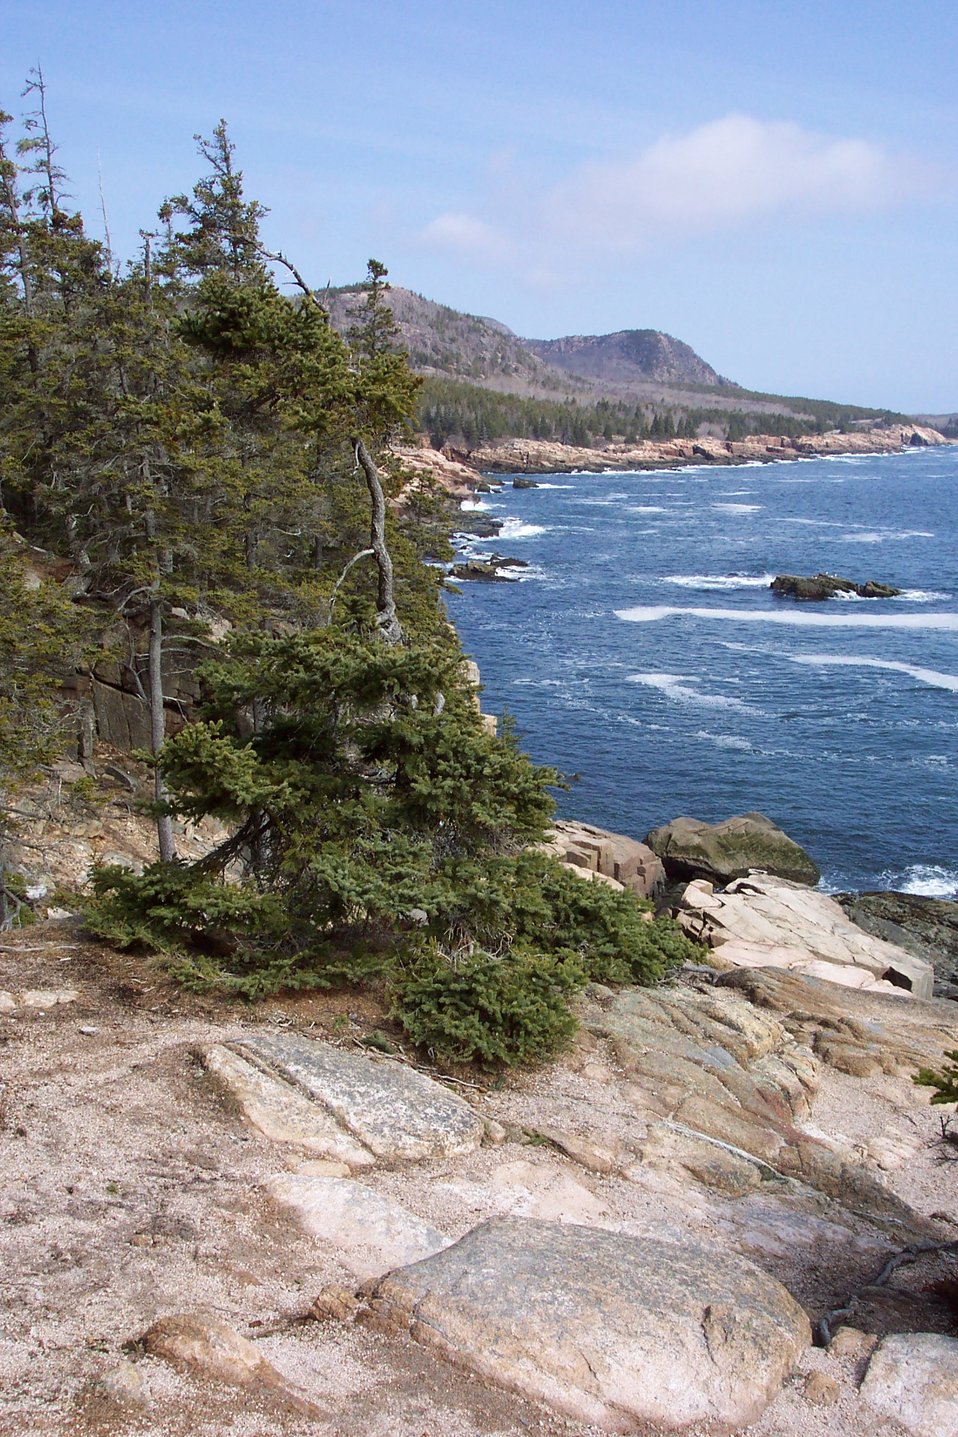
Looking north from the Otter Cliffs.